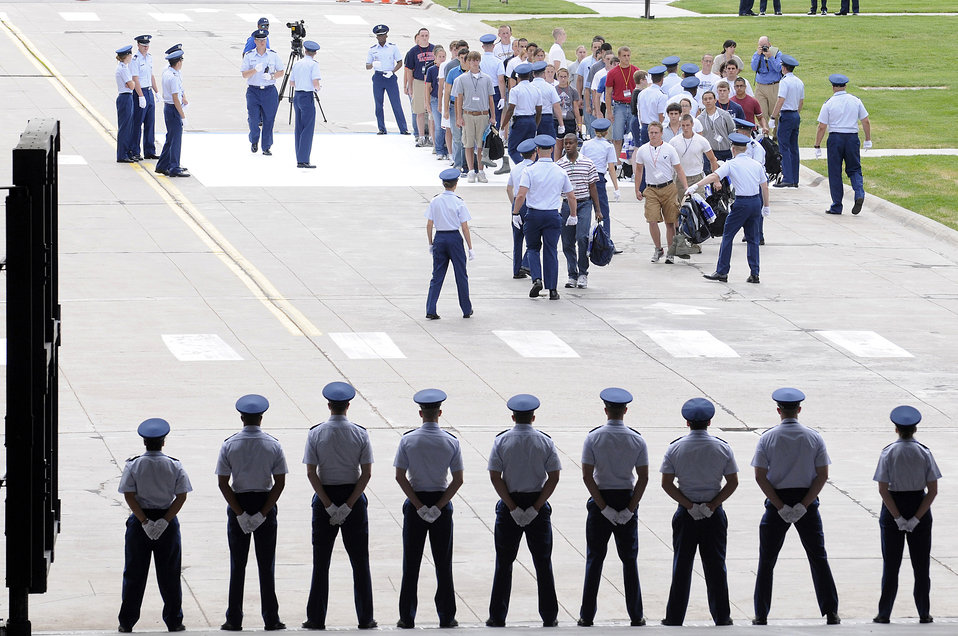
Welcome to the Air Force Academy!

Basic cadets walk toward the core values ramp to the Terrazzo during cadet inprocessing June 25 at the U.S. Air Force Academy in Colorado Springs, Colo. More than 1,300 cadets were accepted to the Class of 2013, out of nearly 10,000 who applied.